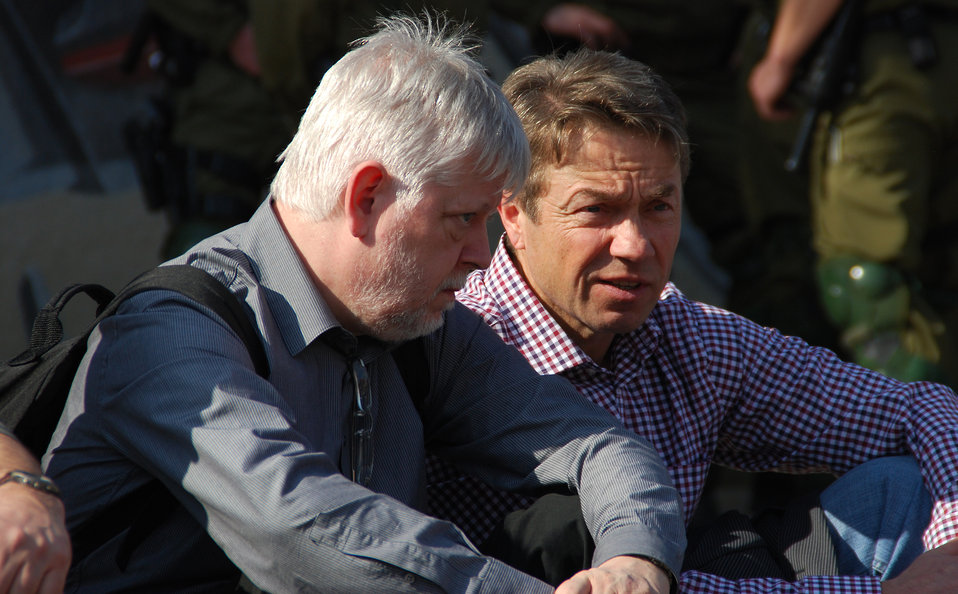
Proteste gegen den Nazi-Aufmarsch am 24.3.2012 in Frankfurt (Oder), mit Helmuth Markov, Finanzminister des Landes Brandenburg und Günter Baaske, Sozialminister des Landes Brandenburg